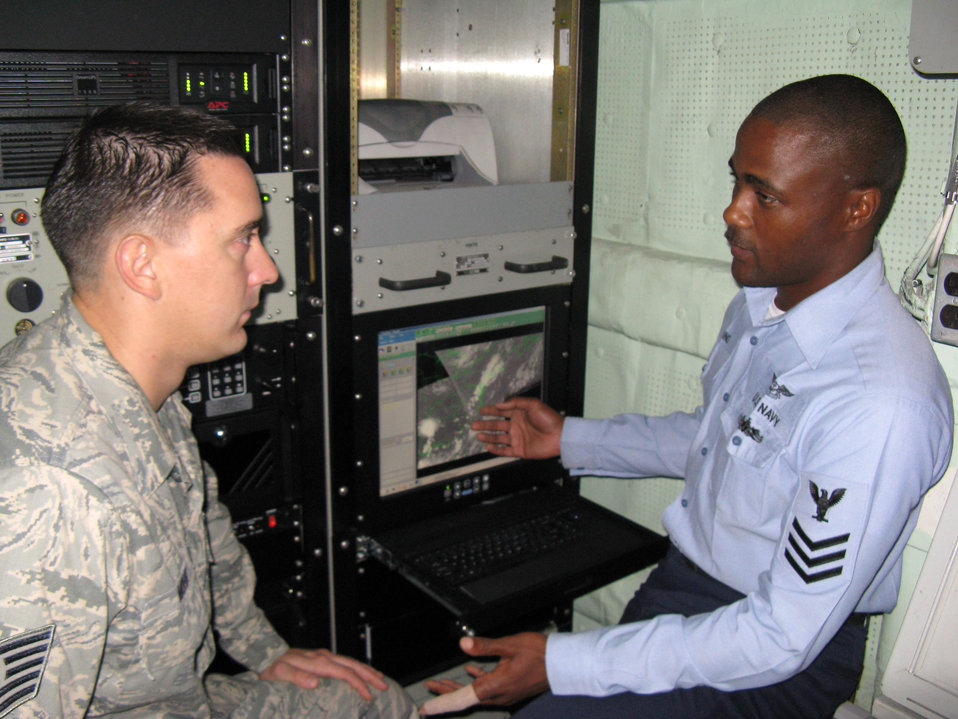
Forecasters afloat support multinational training exercise

Navy Petty Officer 1st Class Timothy Manning demonstrates how to manipulate satellite pictures on the SMQ-11 satellite receiver to Tech. Sgt. Philip Mohr, weather forecaster. A joint Navy and Air Force weather team worked together at sea aboard the USS Bataan in support of JTFEX 08-4, a multinational exercise that included Sailors, Soldiers, Airmen, Marines and Coast Guardsmen.